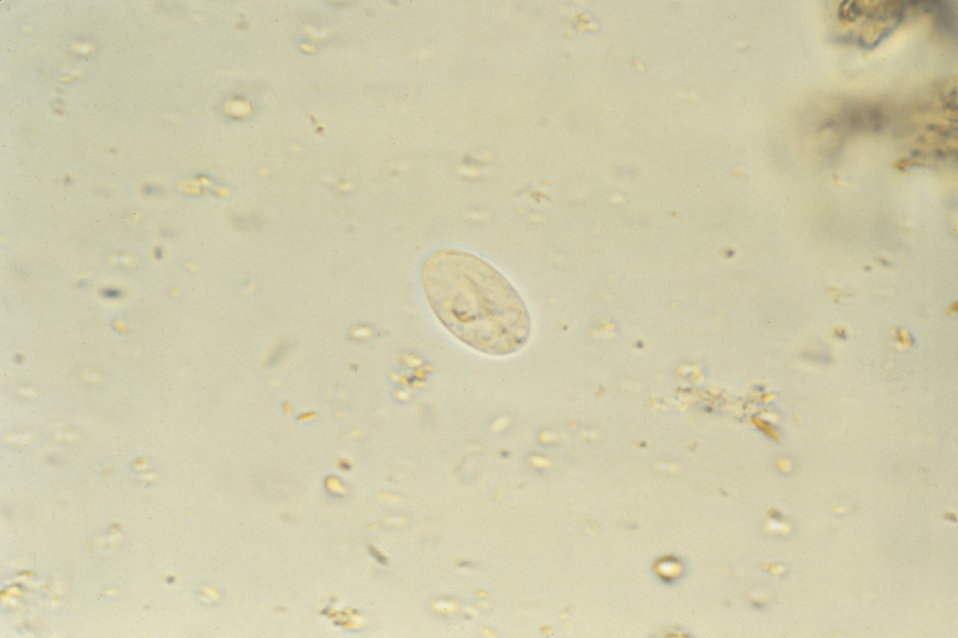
This is a photomicrograph of a Giardia lamblia parasite using an iodine stain.